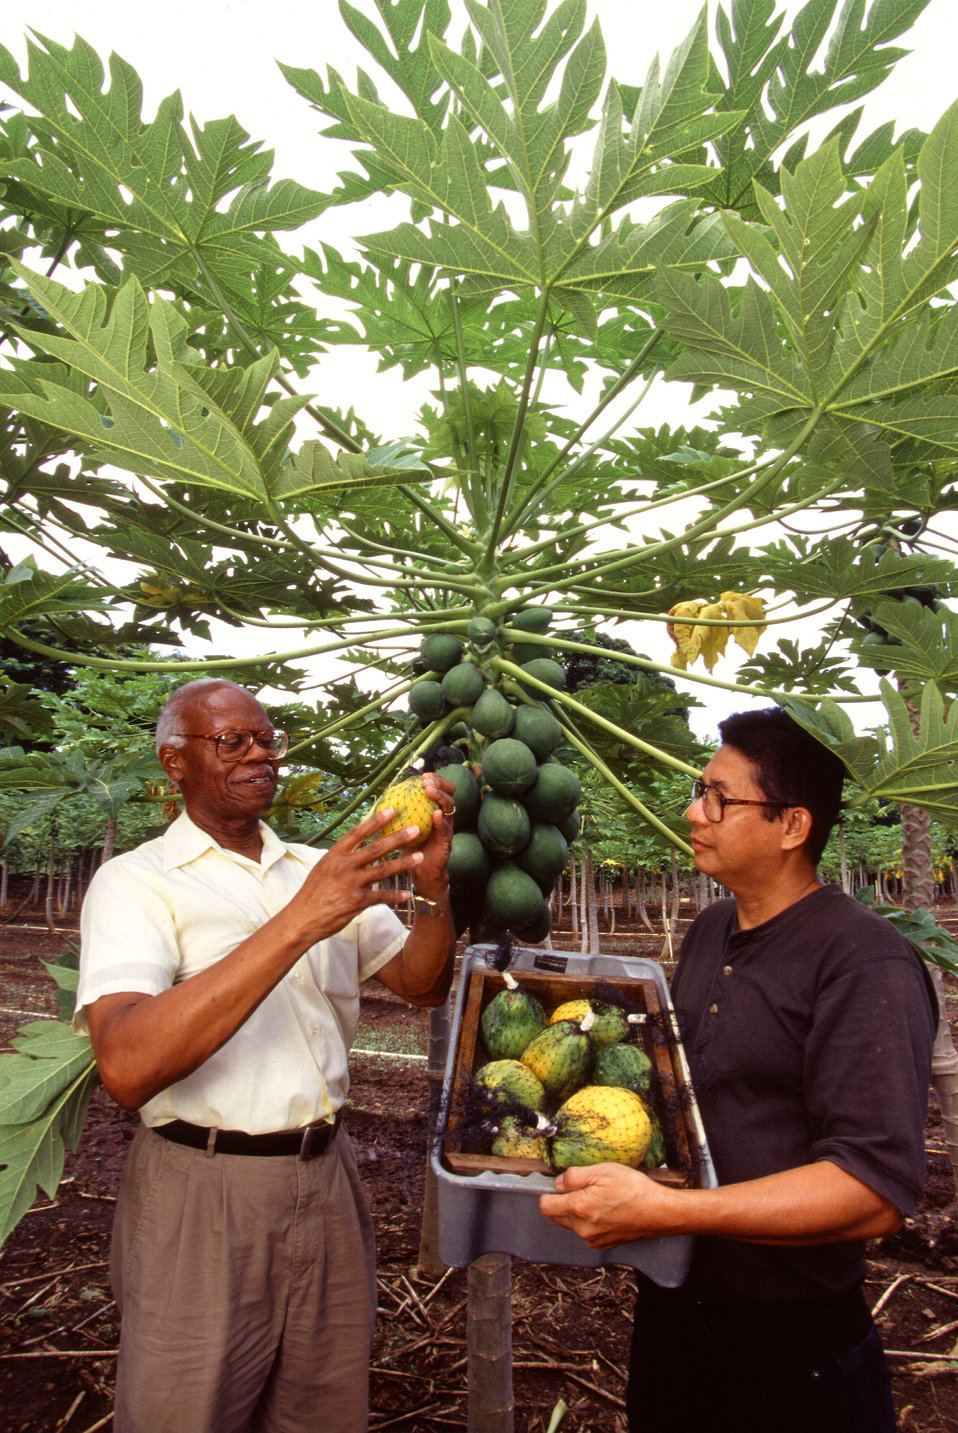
U.S. Department of Agriculture (USDA) Agricultural Research Service (ARS) entomologist Ernest J. Harris and University of Hawaii entomologist Renato C. Bautista examine a papaya fruit trap with oriental fruit fly eggs parasitized by Biosteres arisanuswasps.